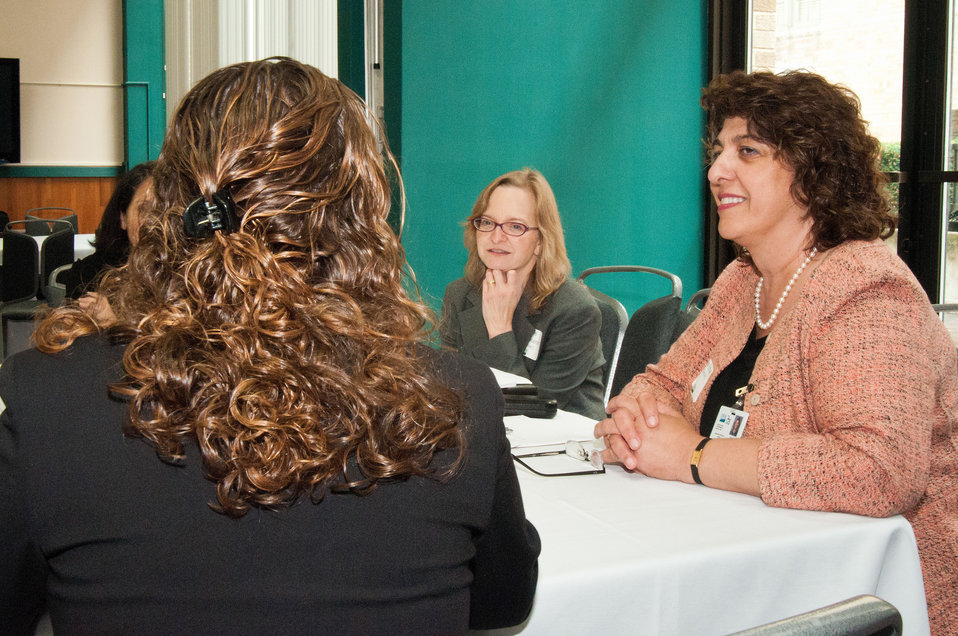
U.S. Department of Agriculture (USDA) Food Safety Inspection Service (FSIS) Terry Nintemann and USDA Agricultural Research Service (ARS) Sevim Erhan listen to an employee talk about workplace “Atmosphere” at USDA’s Office of Human Resources Management (OHRM) Virtual University’s Fall Flash Mentoring Event at USDA in Washington, D.C. on Thursday, Sept. 6, 2012 in Washington, DC.